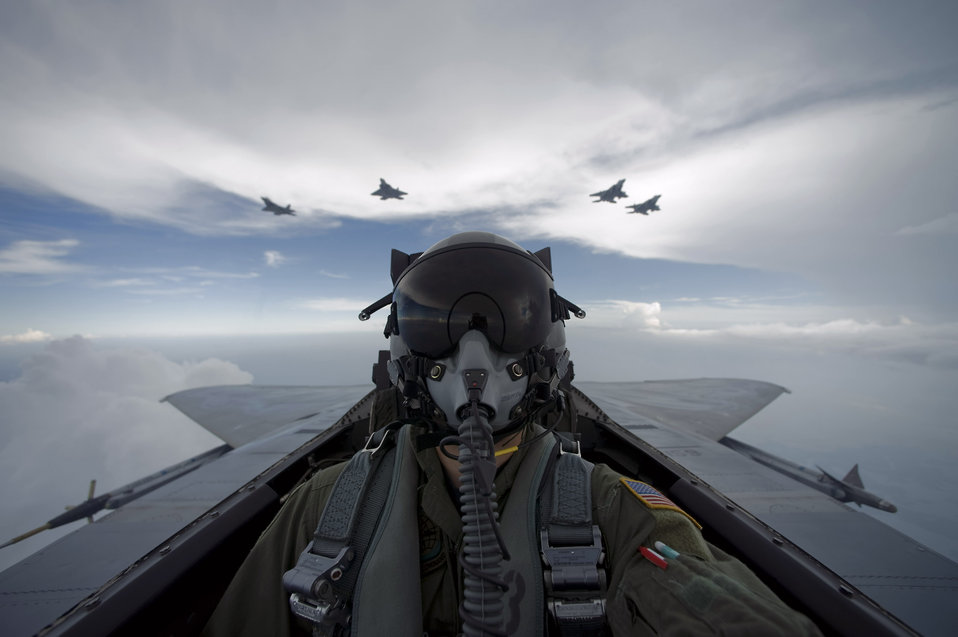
And away we go!

Aerial combat photographer, Staff Sgt. James L. Harper Jr., takes a self portrait Aug. 27 during a sortie over New Orleans with F-15 Eagles from the Louisiana Air National Guard and F-22 Raptors from Langley Air Force Base, Va.